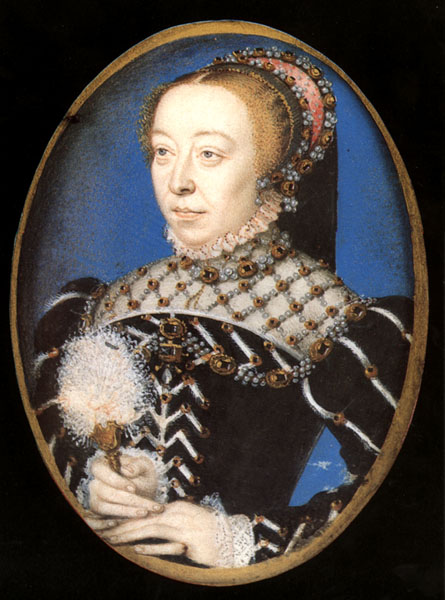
Catherine-de-medici